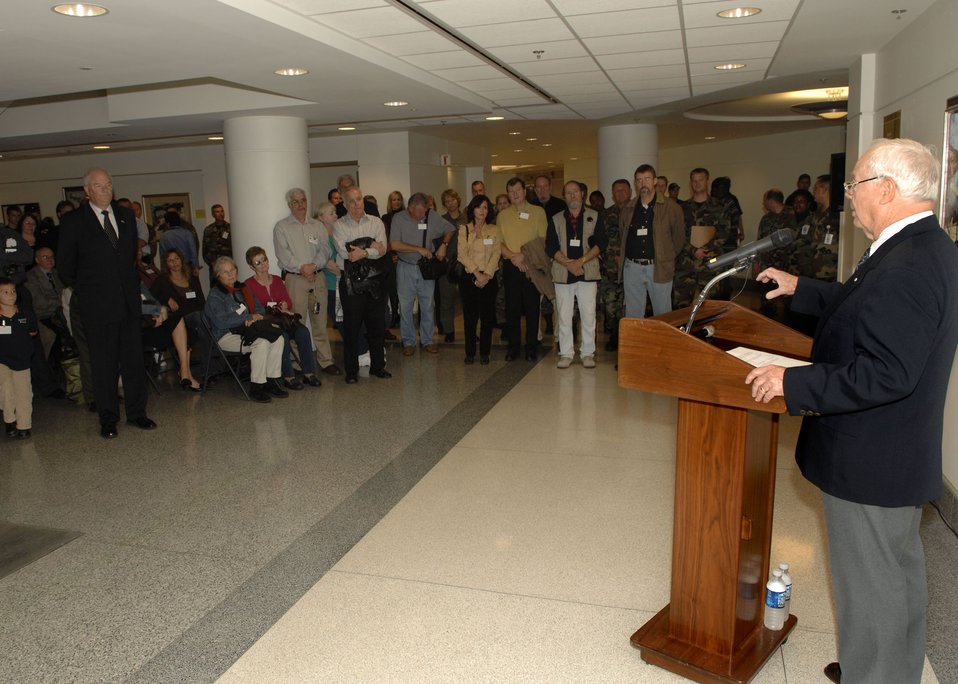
Commemoration

WASHINGTON - Secretary of the Air Force, Michael W. Wynne and many other guests and artists listen as fellow artist, Keith Ferris makes a few remarks about his and other artists participation in the Air Force's Art Program and 60th Anniversay Art Exhibit. The group commemorated numerous paintings highlighting the Air Force' s history here at the Pentagon on Oct. 19, 2006.